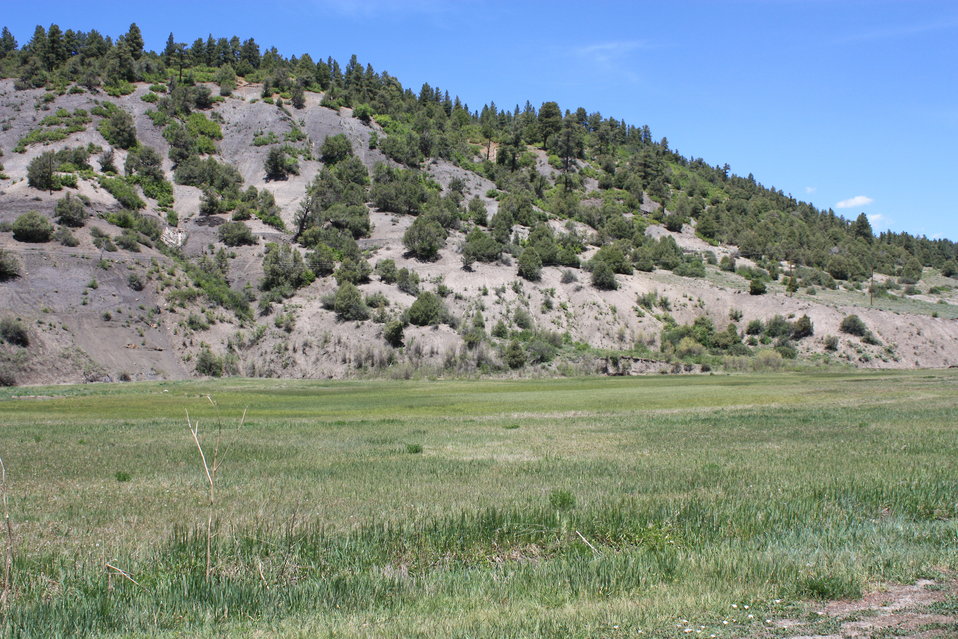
Pagosa Skyrocket Habitat

Light colored exposures of Mancos shale soils as pictured on this barren hillside, is typical habitat for the Pagosa skyrocket.

Photo credit: USFWS
...........................................................................

BACKGROUND:
Pagosa skyrocket (Ipomopsis polyantha) is an extremely rare plant endemic to two populations on Mancos shale outcrops in and around the Town of Pagosa Springs in Archuleta County, Colorado. This member of the phlox family (Polemoniaceae) grows as a rosette for one to many years; then flowers, produces seeds, and dies in its final year of life. In June and July when the species is flowering, numerous bees and other insects can be seen visiting its clusters of white flowers with small purple spots. These pollinators are essential to the survival of the species and are comprised primarily of native ground-dwelling solitary bees. Pagosa skyrocket habitat is unique, being comprised of barren shales where conditions are harsh and difficult for growth.

The species was discovered in 1899 by Charles Fuller Baker, an American naturalist, and described as a new species in 1904 by the well-known botanist Axel Rydberg. No comprehensive surveys were conducted until the mid-1980s, when it became a candidate for listing under the Endangered Species Act. Today the Pagosa skyrocket is threatened by commercial, residential, and agricultural property development; the associated new utility installations and access roads; and from the potential effects of climate change. Because of Pagosa skyrocket’s limited range, the fact that there are only two populations, its small population size, and numerous threats to the species, it was proposed for Endangered Species Act protection in 2010. A final listing is expected in 2011.

Eighty-eight percent of the areas where Pagosa skyrocket are found are private lands. The Endangered Species Act does not protect plants on private lands and therefore, all conservation actions on private land are voluntary. Funding is available to landowners wanting to conserve the species. Please contact Gina Glenne or Ellen Mayo at 970-243-2778 for further information on this species and ways that you can help with conservation and recovery.